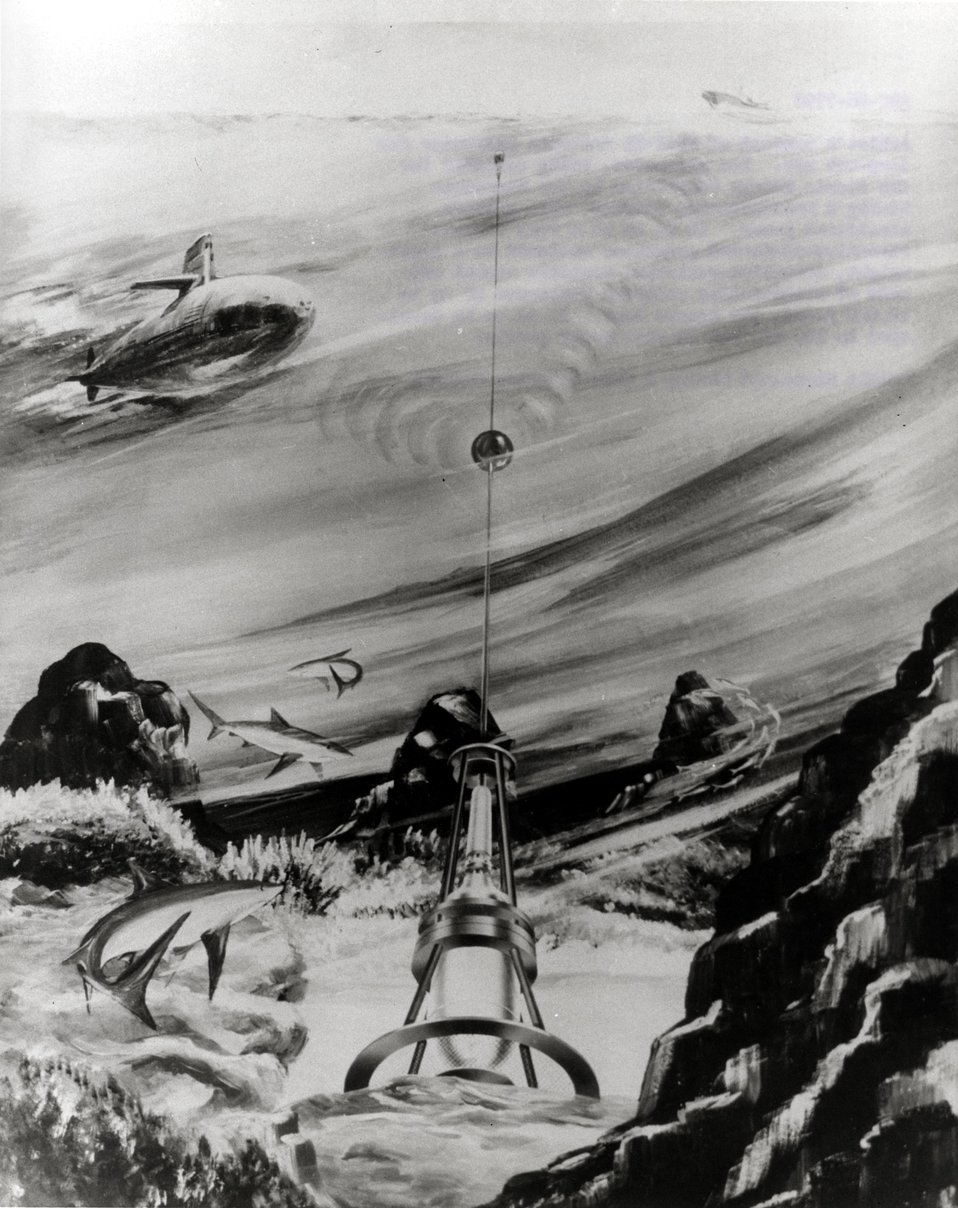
Artist's concept of SNAP-21 isotopic generator for deep-sea use. The generator, being designed for the Atomic Energy Commission by the Minnesota Mining Manufacturing Company, will provide electrical power.